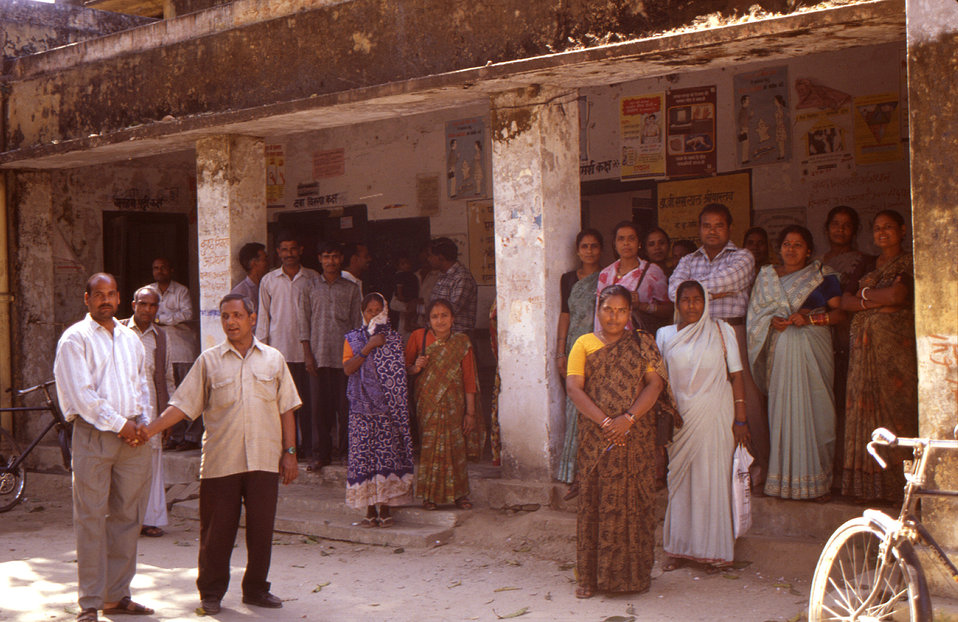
The STOP Initiative was part of the Stop Polio Campaign of 2000, which was a global effort to eradicate polio, and was the largest public health initiative in history. The initiative was established in 1988 by the World Health Assembly with its main goal being that of the eradication of polio, while strengthening the worldwide capacity to control other major childhood diseases. This 2000 photograph depicted a number of local Health Care Workers standing outside a clinic in India, preparing for a National Immunization Day (NID). Following each NID, health workers visited each home in a given District, in order to verify that all children under 5 years of age had received the polio vaccine. Written outside the door of this house were the dates indicating when the home had been visited, and that the children had been properly immunized.